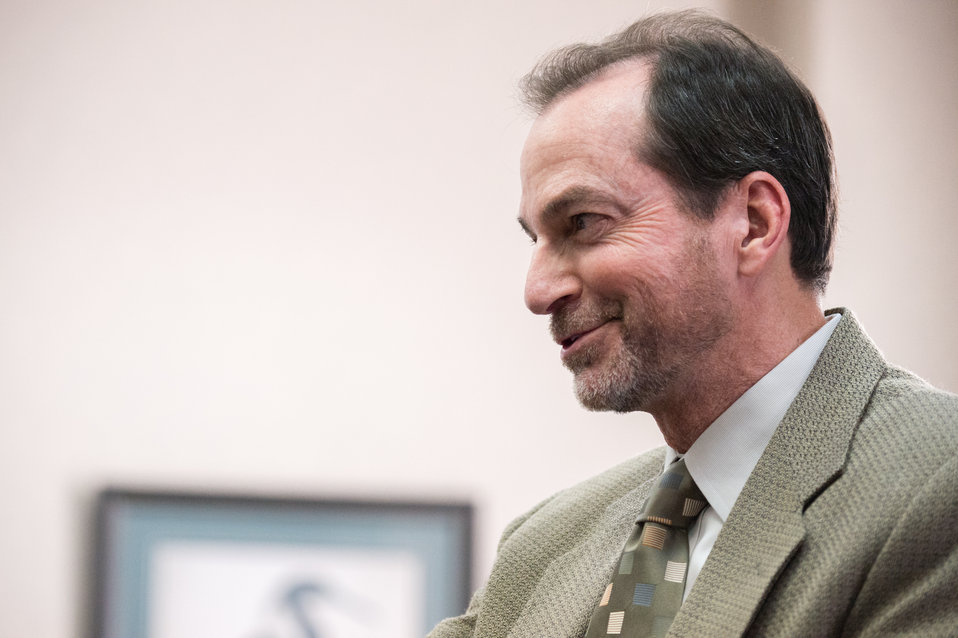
U.S. Department of Agriculture (USDA) Natural Resources Conservation Service (NRCS) Science and Technology Deputy Chief C. Wayne Honeycutt, Ph.D., stands to answer a question from The People’s Republic of China Ministry of Agriculture (MOA) Vice Minister H.E. Zhang Taolin at the USDA headquarters Whitten Building, in Washington, D.C., on Friday June 13, 2014.